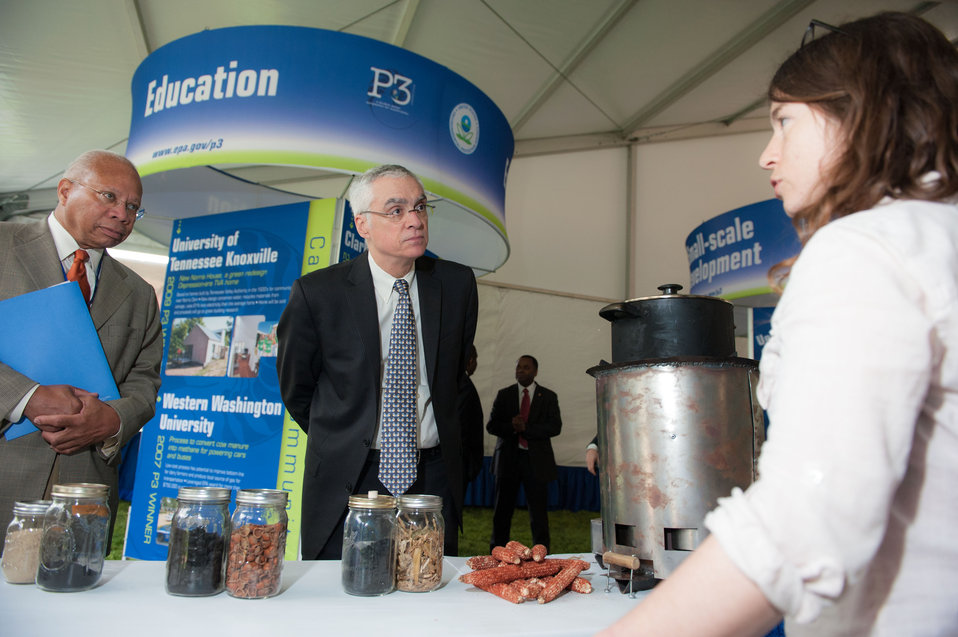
April 18, 2013 - EPA Acting Administrator Bob Perciasepe Visits Student Designs on National Mall

Landing a spot at the design expo not only gave students the chance to see the other creations, but it was also a chance for a personal visit from area environmental leaders.

Here, EPA Acting Administrator Bob Perciasepe and National Center for Environmental Research (NCER) Director, Jim Johnson, Jr. stop in to chat with a team member from the University of Utah.

Their project? A low-cost, sustainable solution for olive mill waste. Proven composting and trickling filtration techniques convert rural olive mill wastes into soil additives and dischargeable water.

Food production around the world often generates highly toxic waste products. This is a particular problem for small operations such as olive oil mills in the Mediterranean region. University of Utah students are working with a team from Birzeit University in the West Bank where disposal of untreated olive mill wastes generates odor, pollutes land and water and inhibits the growth of plants and animals. The students have developed a simple, cost-effective process to treat solid and liquid wastes generated by small-scale olive mills that will also provide treated irrigation water and fertilizer for the olive orchards.

University of Utah P3 page
Olive Wastes Facebook Page

People Prosperity and the Planet: National Sustainable Design Expo on the National Mall 18-19 April 2013